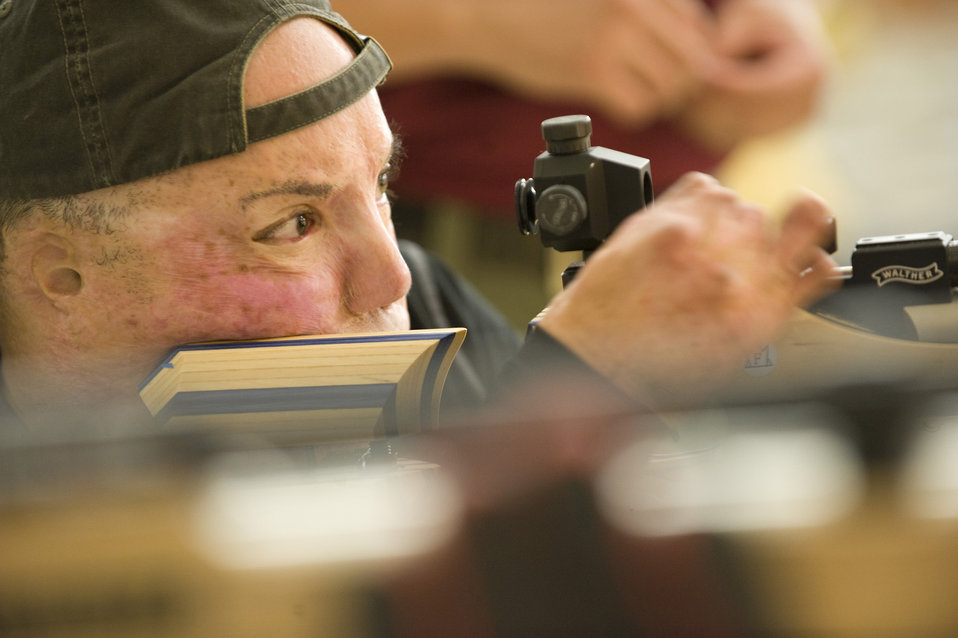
Warrior Games Airmen prepare for competition

Tech. Sgt. Israel Del Toro practices shooting May 11, 2010, at the Olympic Training Center in Colorado Springs, Colo. Sergeant Del Toro along with 16 other Air Force athletes are competing in the inaugural Warrior Games through May 14, 2010, in Colorado Springs. Sergeant Del Toro is assigned to Lackland Air Force Base, Texas.